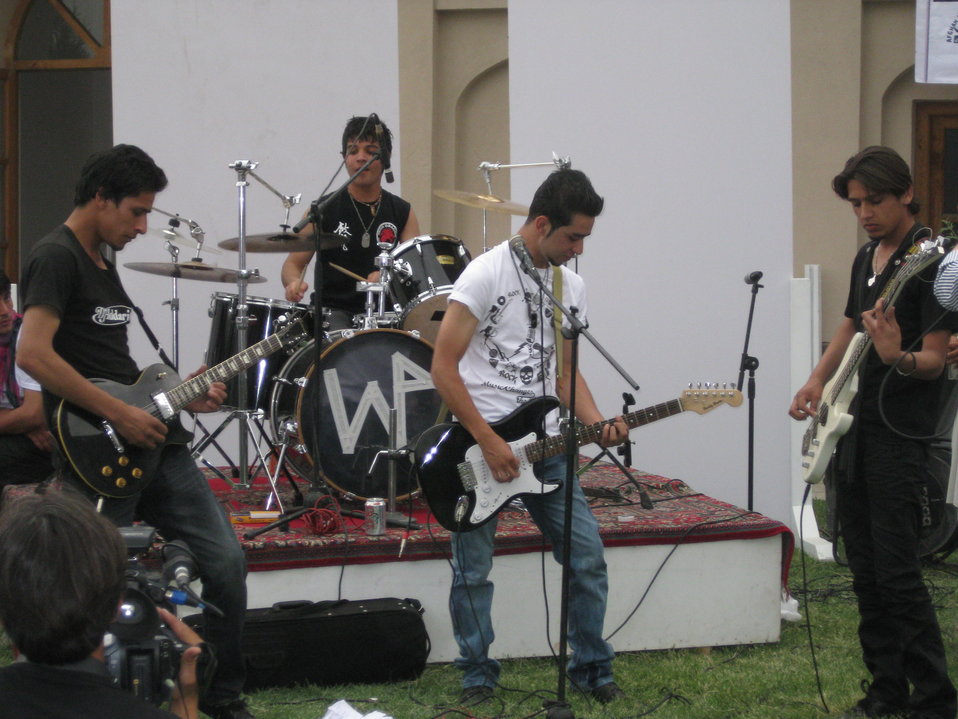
Afghan Youth Voices 109